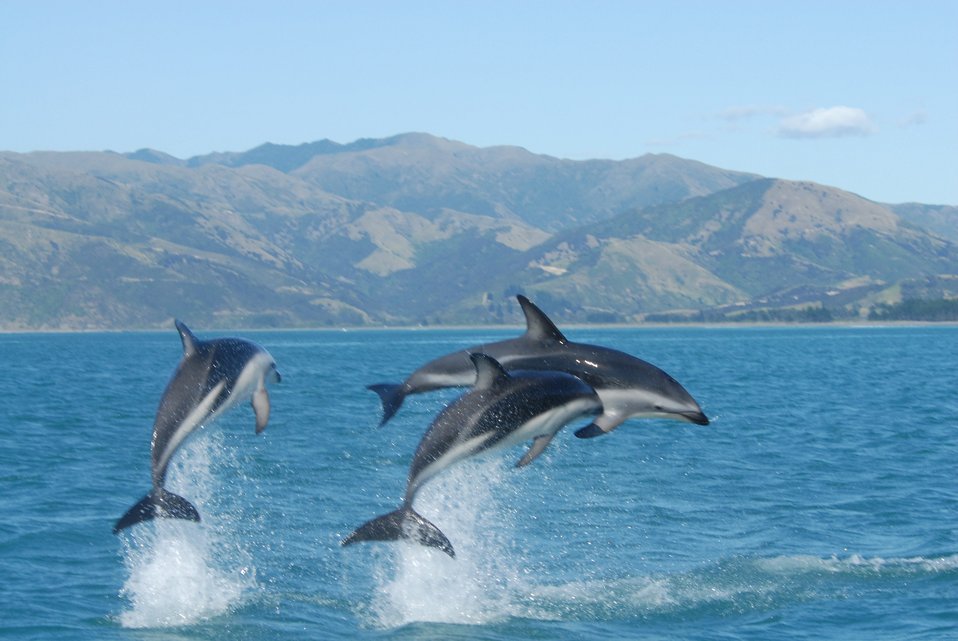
Dusky dolphin (Lagenorhynchus obscurus)